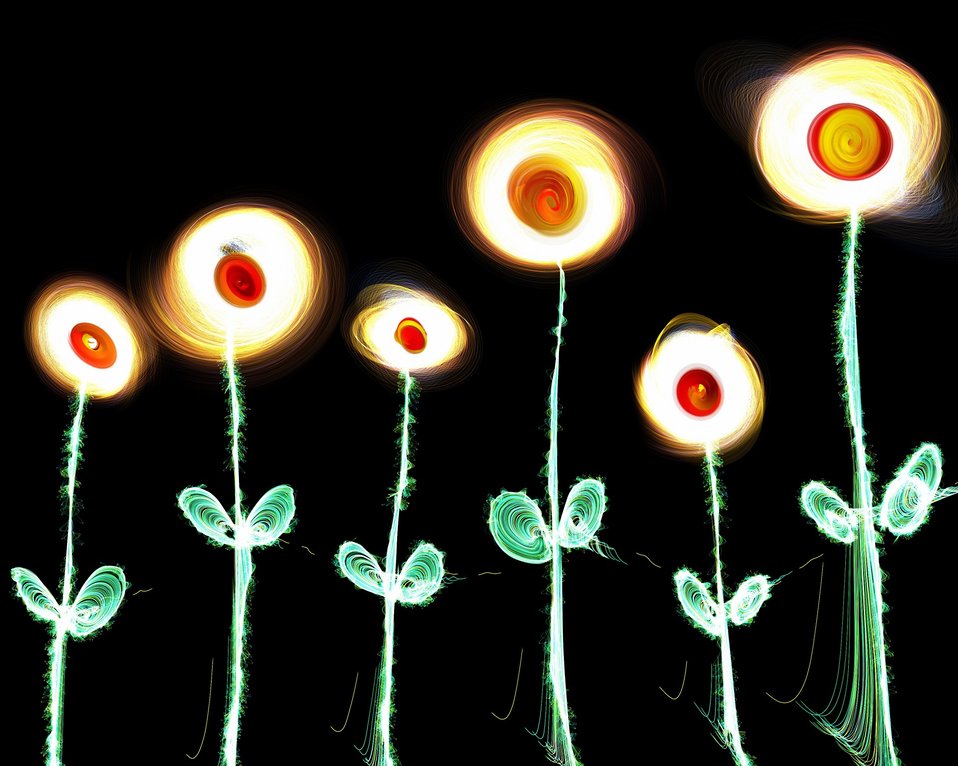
Electric flowers

Abstract style flowers drawn on a black background..